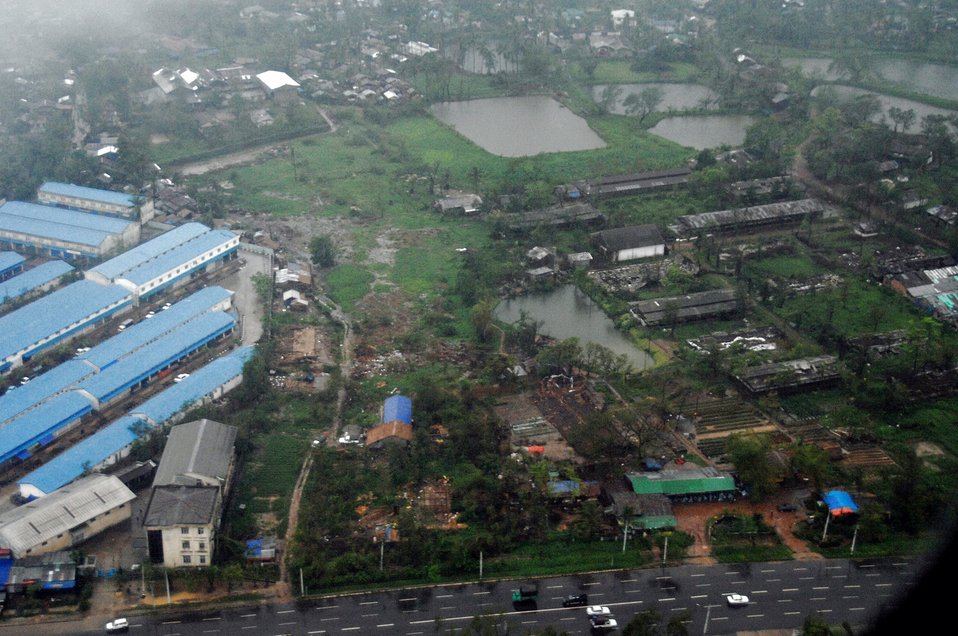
Joint Task Force Caring Response brings help to Burma

Shown is an aerial view of Burma May 19 from a U.S. Air Force C-130 delivering aid to the citizens of Burma. The country was devastated after Cyclone Nargis struck on May 2.